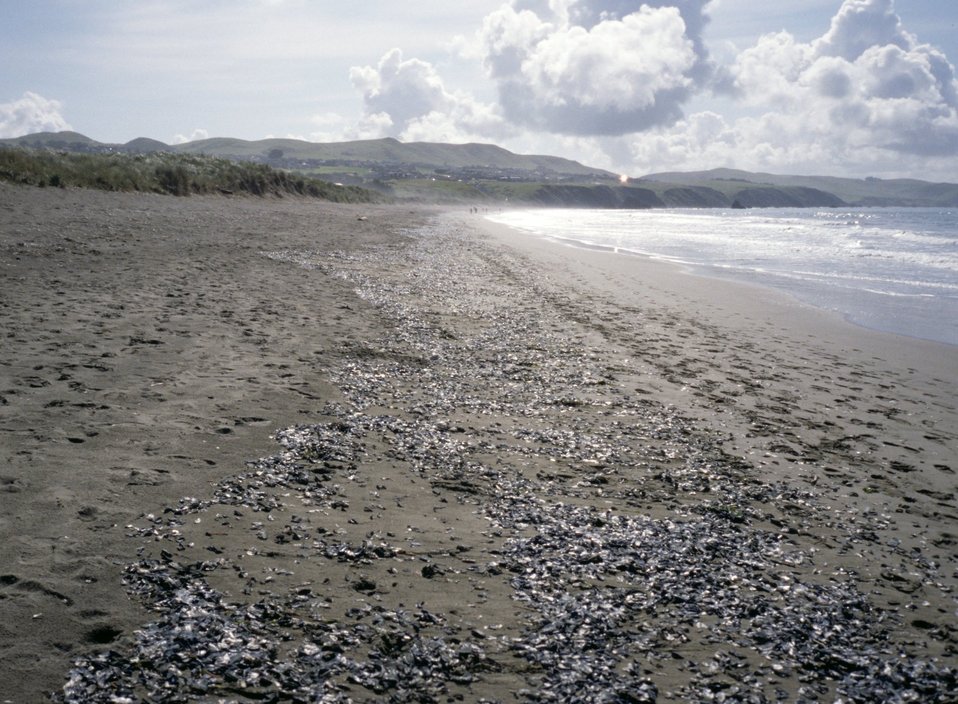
Doran Beach